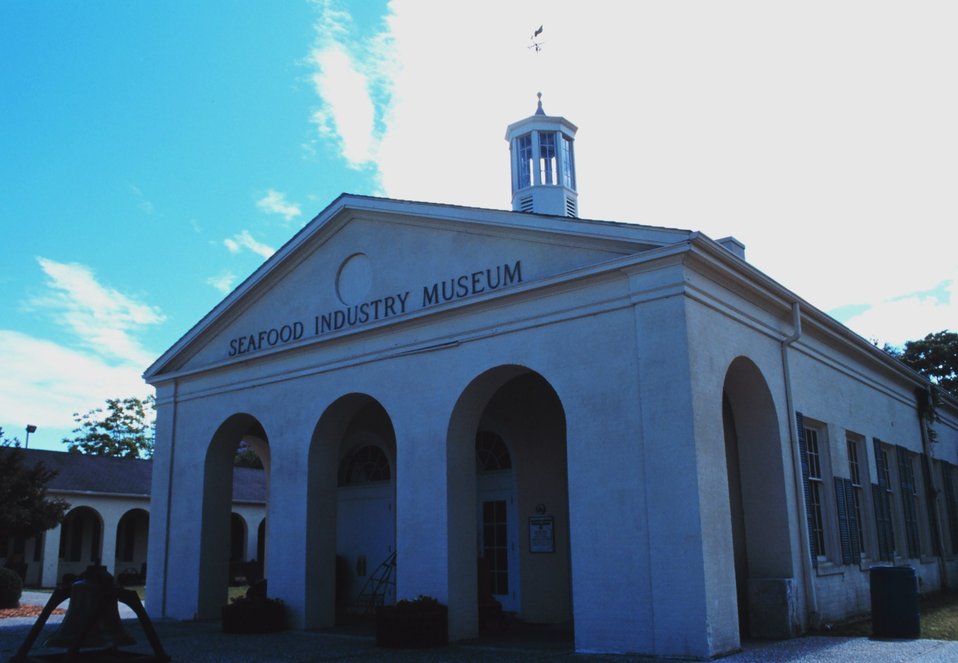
The Seafood Industry Museum